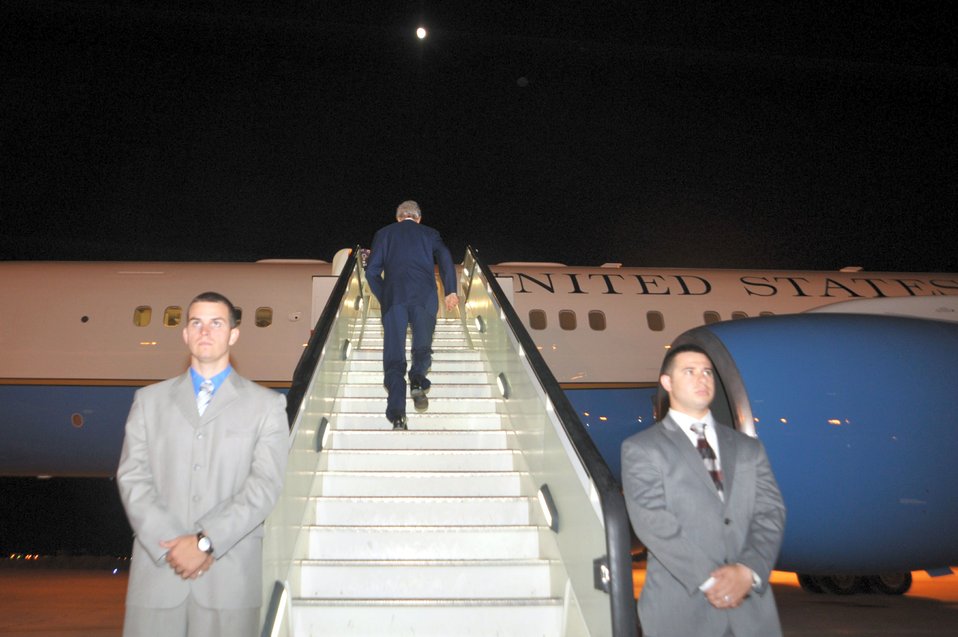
Secretary Kerry Prepares To Depart Amman, Jordan

U.S. Secretary of State John Kerry climbs the steps of the U.S. Air Force jet under a moonlit sky on July 19, 2013, as he prepares to depart Amman, Jordan, following Middle East peace negotiations.